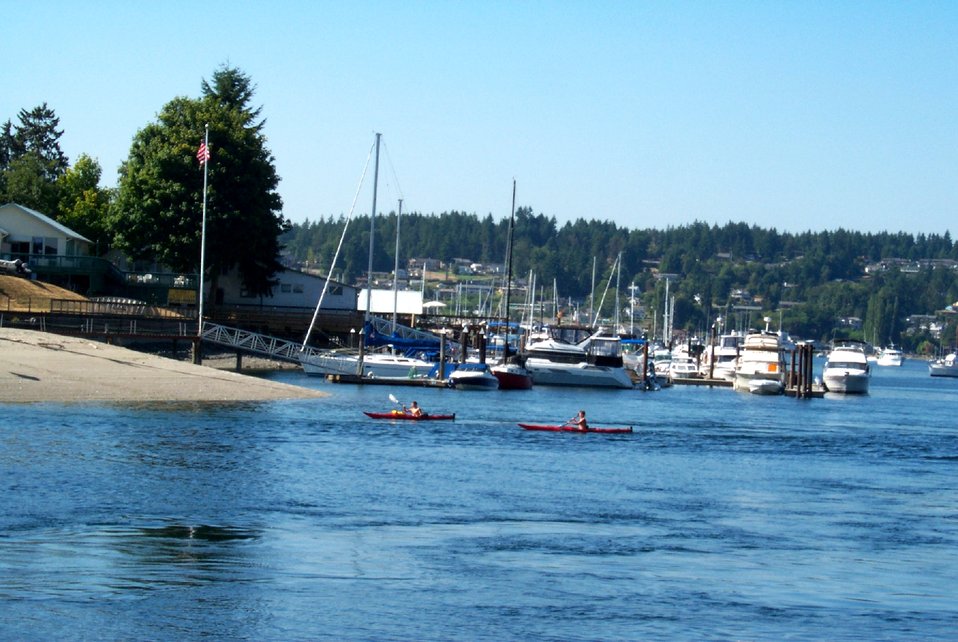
Kayakers enjoying a quiet day inside of Gig Harbor.